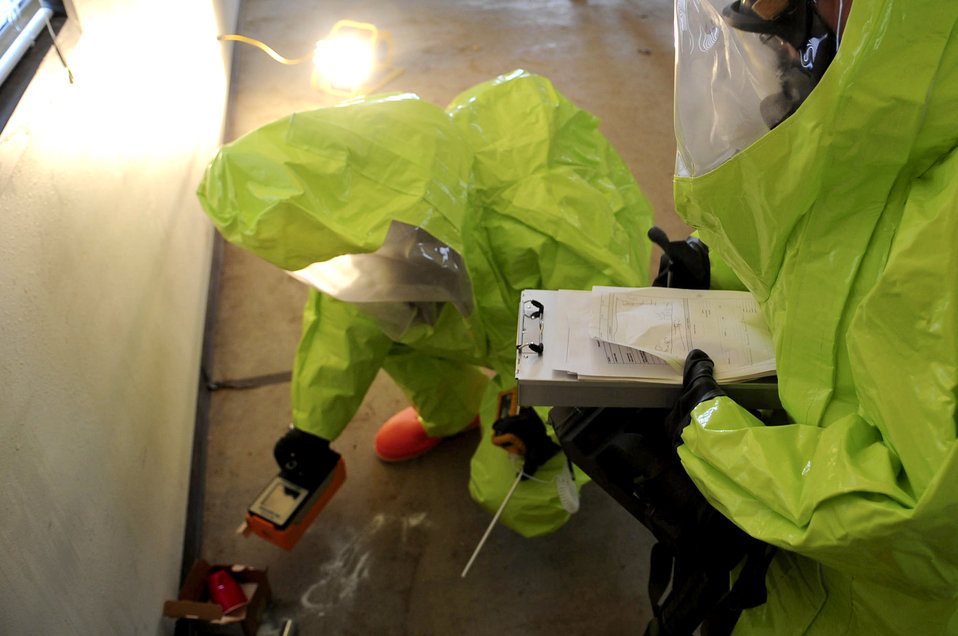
Ellsworth Airmen ready for any emergency

Airmen 1st Class David Jack (left) and Matthew Hung, 28th Civil Engineer Squadron emergency management journeymen, find